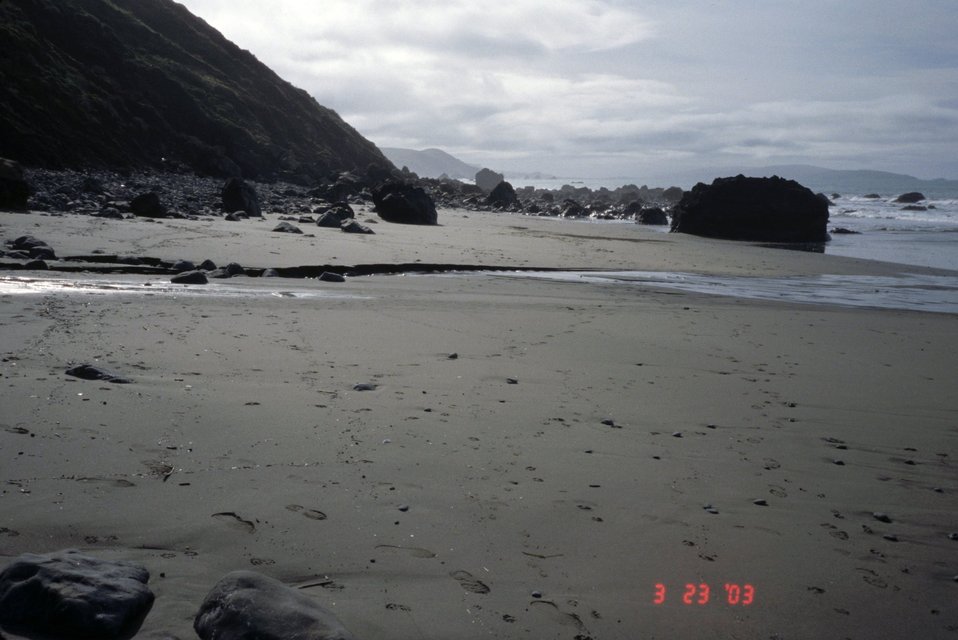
Pinnacle Gulch Beach